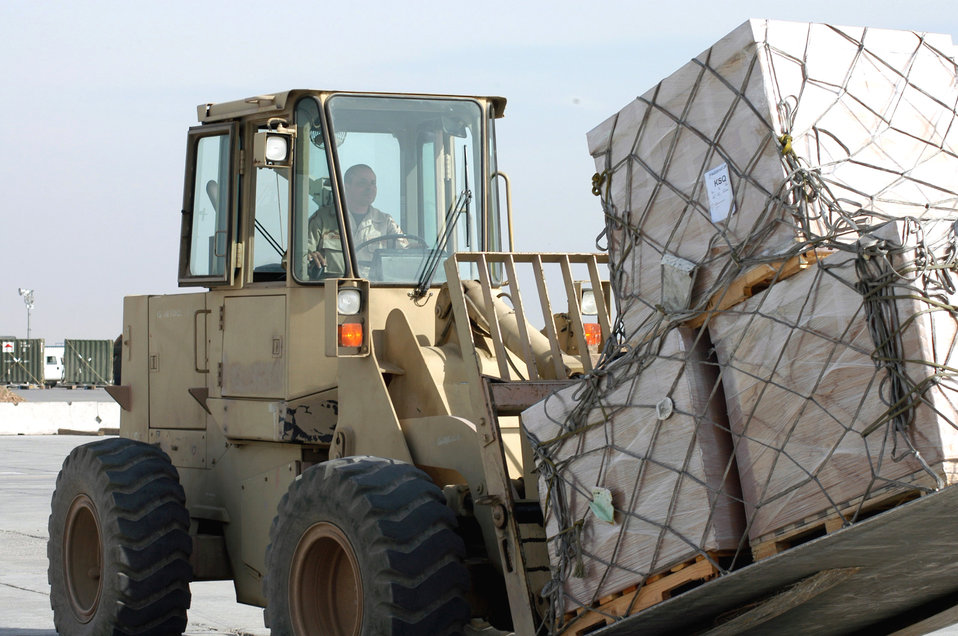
Air terminal operators keep OEF freight, passengers moving

KARSHI-KHANABAD AIR BASE, Uzbekistan -- Master Sgt. Johnny Poole uses a forklift to pick up cargo from a plane here recently. He is an air transportation craftsman with the 416th Expeditionary Mission Support Squadron's Air Terminal Operations Center deployed from Robins Air Force Base, Ga.